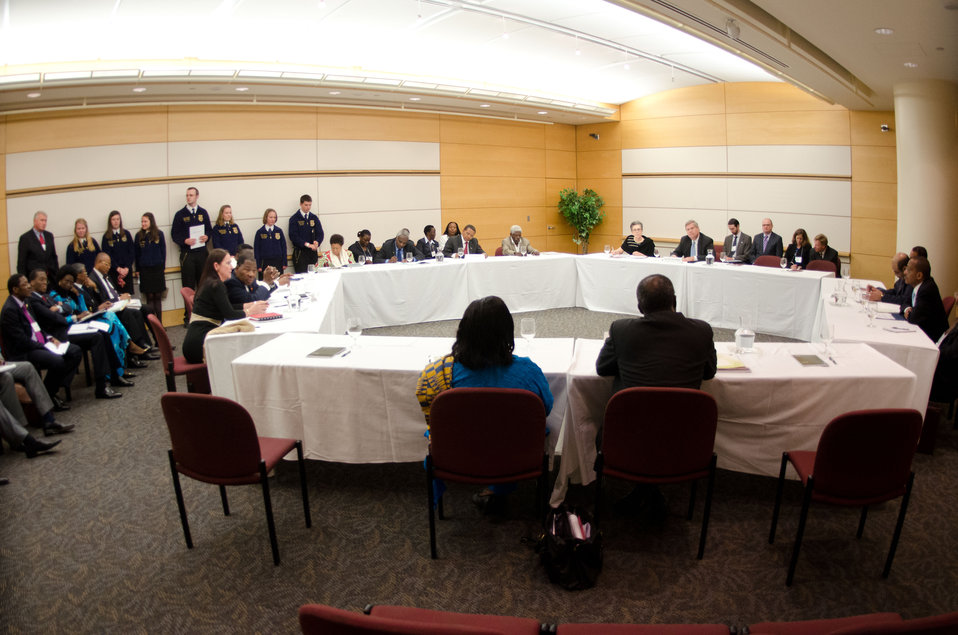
Ghana Minister of Food and Agriculture the Honorable Kweshi Ahwoi (center right) makes his statement at the meeting of African Heads of State conference at the Ronald Reagan Federal Building in Washington, D.C., on Friday, May 18, 2012. Agriculture Secretary Tom Vilsack (at far right table) invited FFA state officers (standing right- left Matthew Dodson, Jenna Moser, Sarabeth Royer, Tyler Claypool, Bree Wilkins, Janie Jackson, and Caroline Hutchison) to attend the conference that included the countries of (clockwise from Secretary Vilsack's table) Ethiopia, Ghana, Benin, and Tanzania.